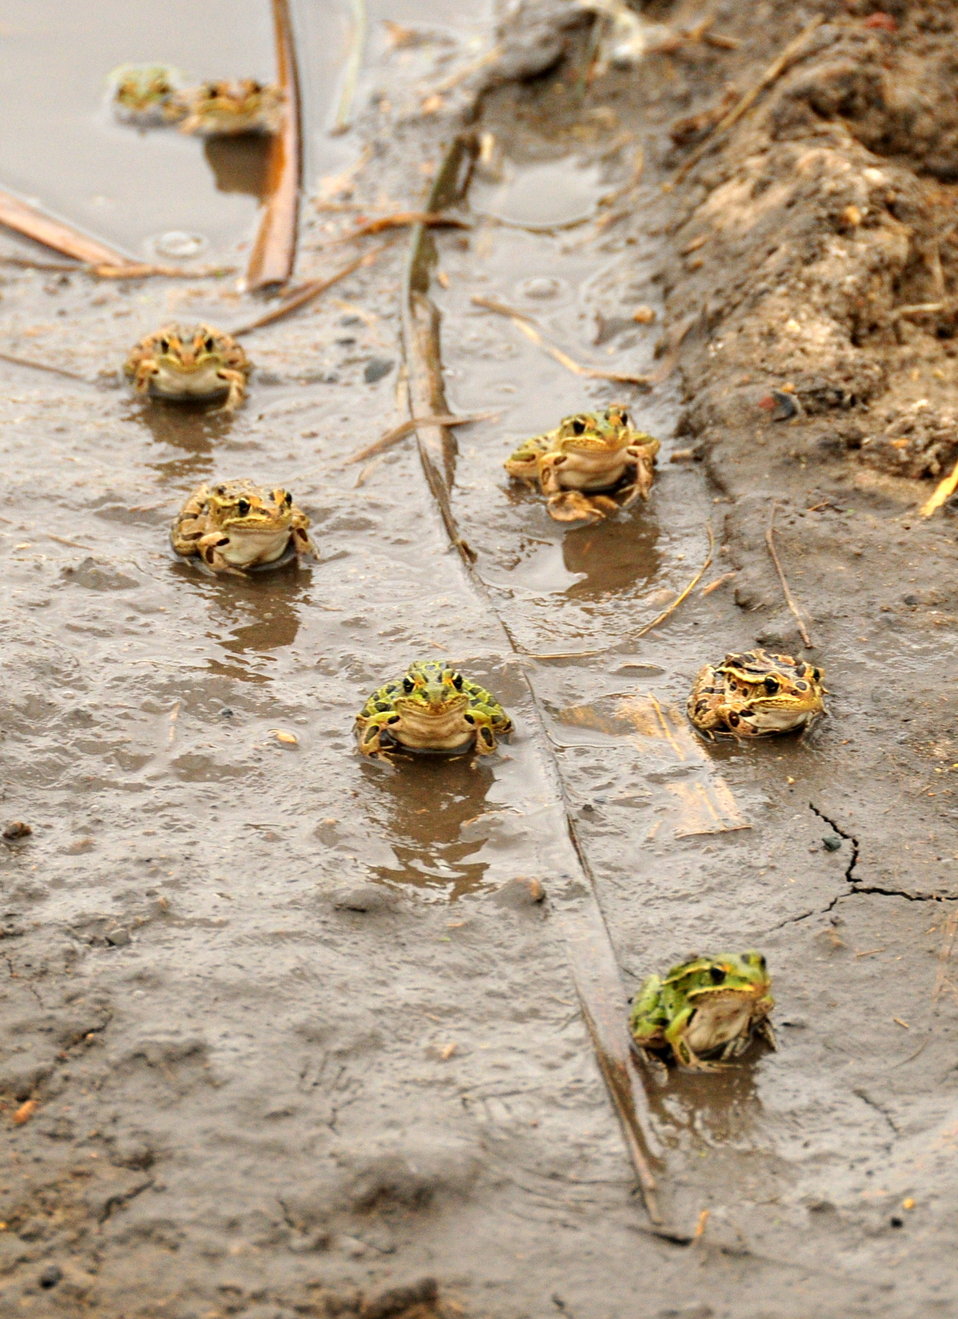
Northern leopard frogs Sand Lake WMD 01

Northern leopard frogs concentrate in the fall at an overwintering site on Sand Lake WMD.